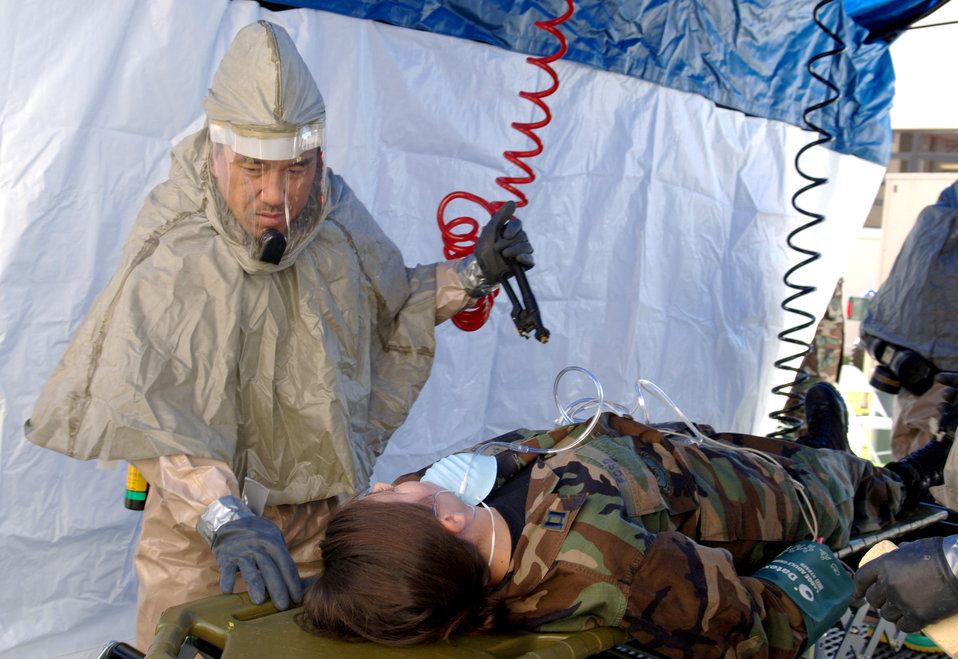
Decontamination

MACDILL AIR FORCE BASE, Fla. (AFPN) -- Capt. Rebecca Ford gets decontaminated by a member of the 6th Medical Operations Squadron decon team after a mock chemical attack Jan. 18 here. The decon team has eight to 10 members. The tent takes approximately 12 minutes or less to set up.